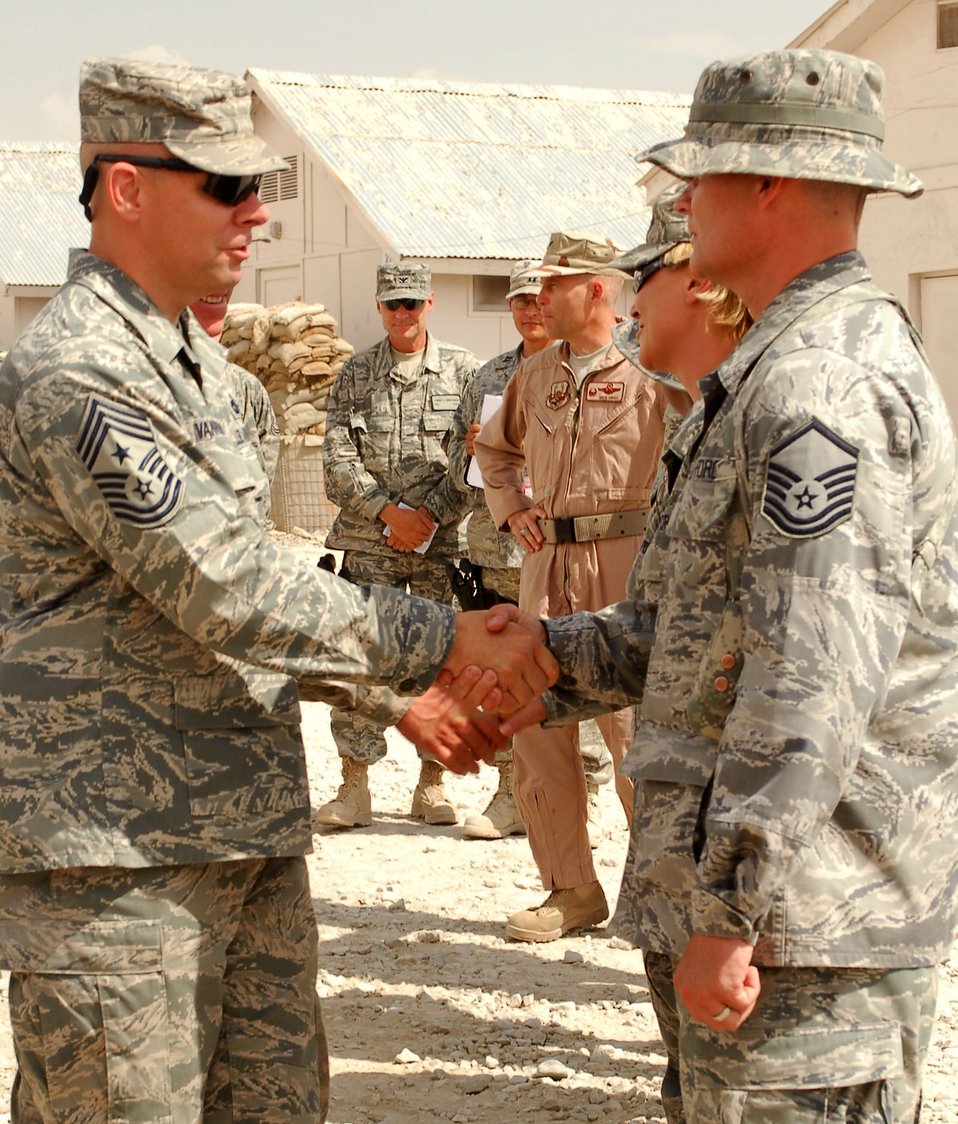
Airmen demonstrate their importance to Afghanistan, joint operations

Chief Master Sgt. Dennis Vannorsdall congratulates Master Sgt. Gary Walters, Medical Embedded Training Team, for being an forward operating base superior performer Aug. 30, 2009. The Airmen are assigned to FOB Lightning as joint expeditionary tasked Airmen who work day-to-day for Army commanders while they're also administratively assigned to Air Force commanders under the 755th Air Expeditionary Group at Bagram Airfield, Afghanistan. The JET Airmen are part of the Embedded Training Team, which mentors Afghan National Army Forces in many skills to include medical and public affairs. Chief Vannorsdall is the 455th Air Expeditionary Wing command chief.